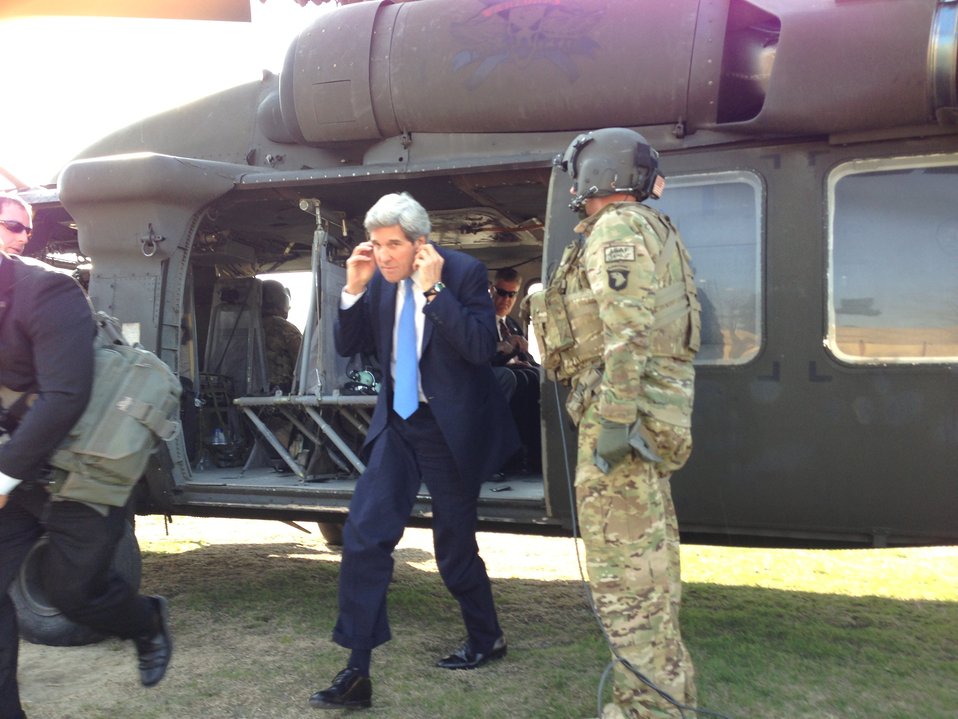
Secretary Kerry Arrives in Kabul

U.S. Secretary of State John Kerry steps of a U.S. military helicopter upon arriving in Kabul, Afghanistan on March 25, 2013.